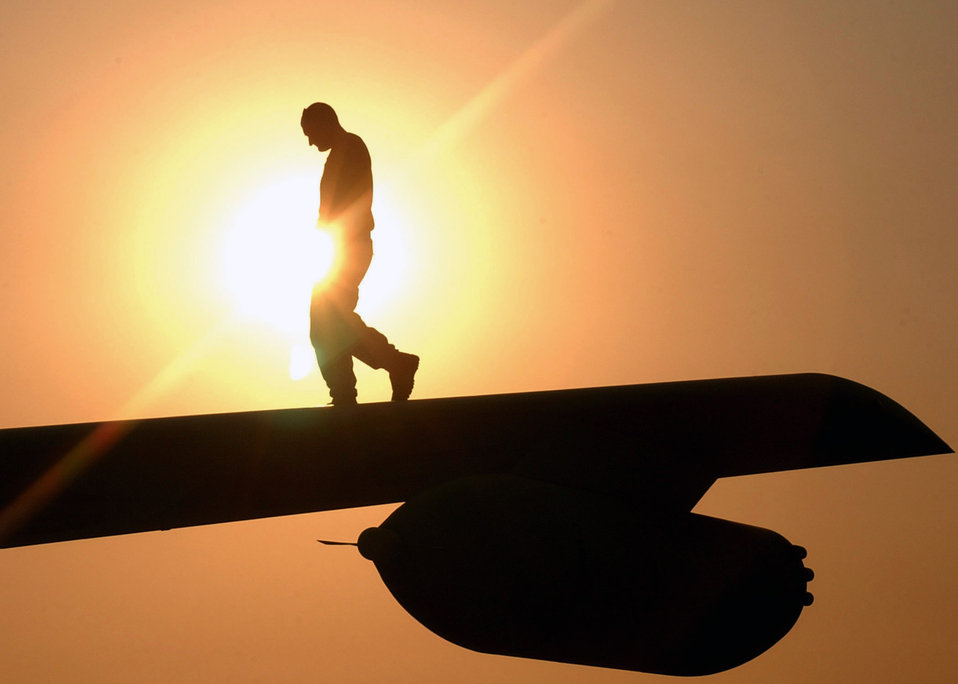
Wing walker

OPERATION ENDURING FREEDOM -- Staff Sgt. Mark Koehler inspects the wing of a KC-135R Stratotanker after it arrived at a forward-deployed location in Southwest Asia. Koehler is a crew chief deployed from the 92nd Air Refueling Wing at Fairchild Air Force Base, Wash.